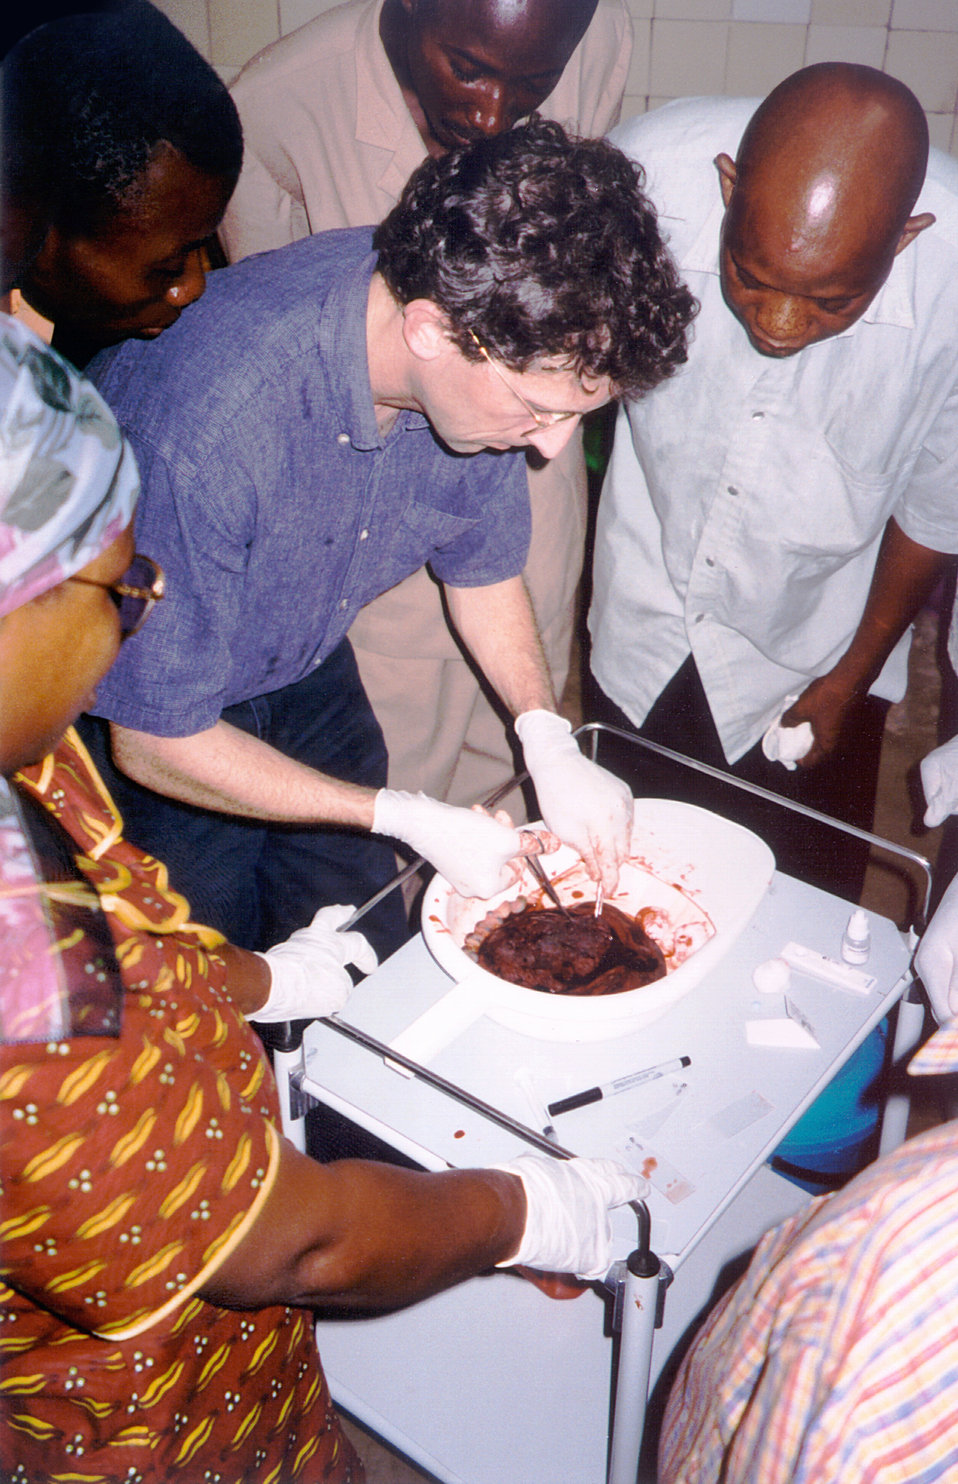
Here EIS Officer Robert Newman (standing Cntr), Malaria Epidemiology BR, DPD, NCID, is giving a demonstration in Burkina Faso.